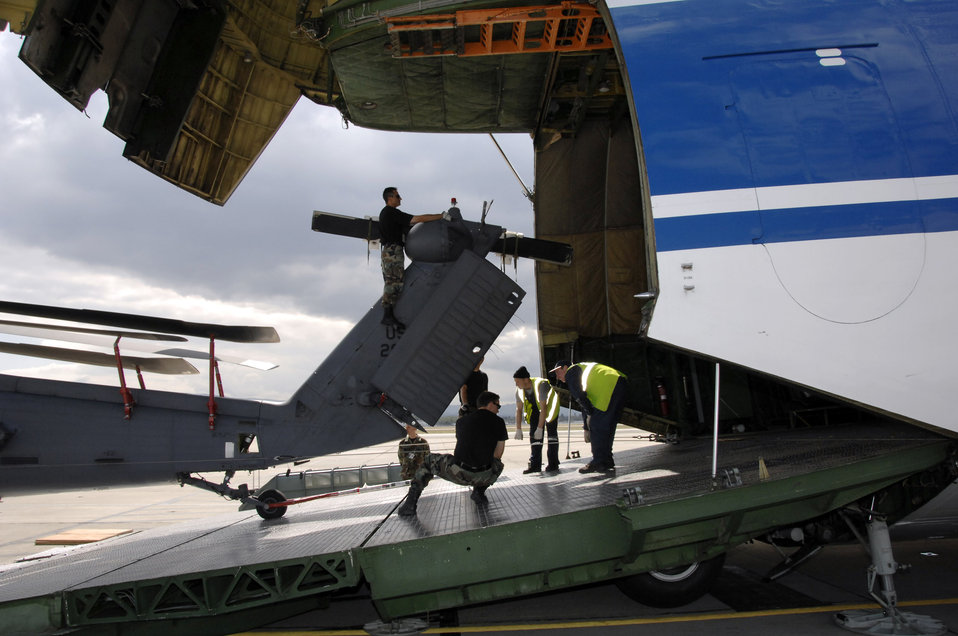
Russian aircraft transports ANG rescue helicopters

Airmen from the 129th Rescue Wing load a HH-60G Pave Hawk rescue helicopter onto a Russian Volga-Dnepr AN-124 long-range heavy transport aircraft April 20 at Moffett Federal Airfield, Calif. The contracted AN-124 transported 129th Rescue Wing deployment cargo to Afghanistan because the high operations tempos of Operations Iraqi Freedom and Enduring Freedom have kept C-17 Globemaster III and C-5 Galaxy aircraft fully engaged.